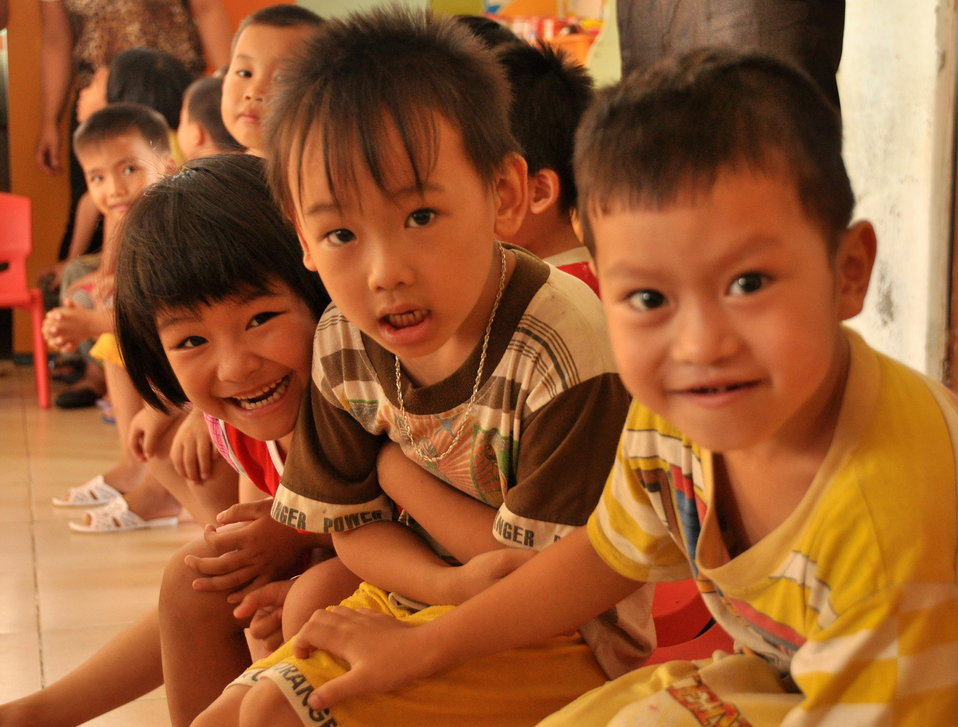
USAID Delivers Deworming Medication to Kindergartners in Nam Dinh Province

Children of Vietnam's Nam Dinh Province receive deworming medicine in a program supported by USAID and World Vision Australia.
June 1, 2013